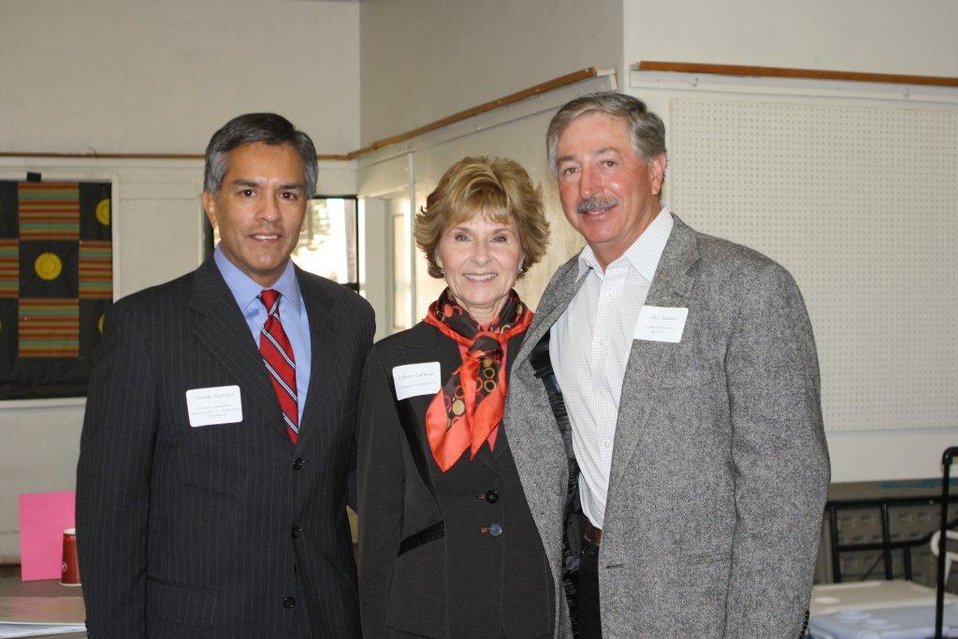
Deputy Thomas Guevara, Deputy Assistant Secretary for Regional Affairs at the Economic Development Administration (left); Colorado Agriculture Commissioner John Salazar (right), and Colleen Callahan of USDA prepare for the morning session at the drought conference.